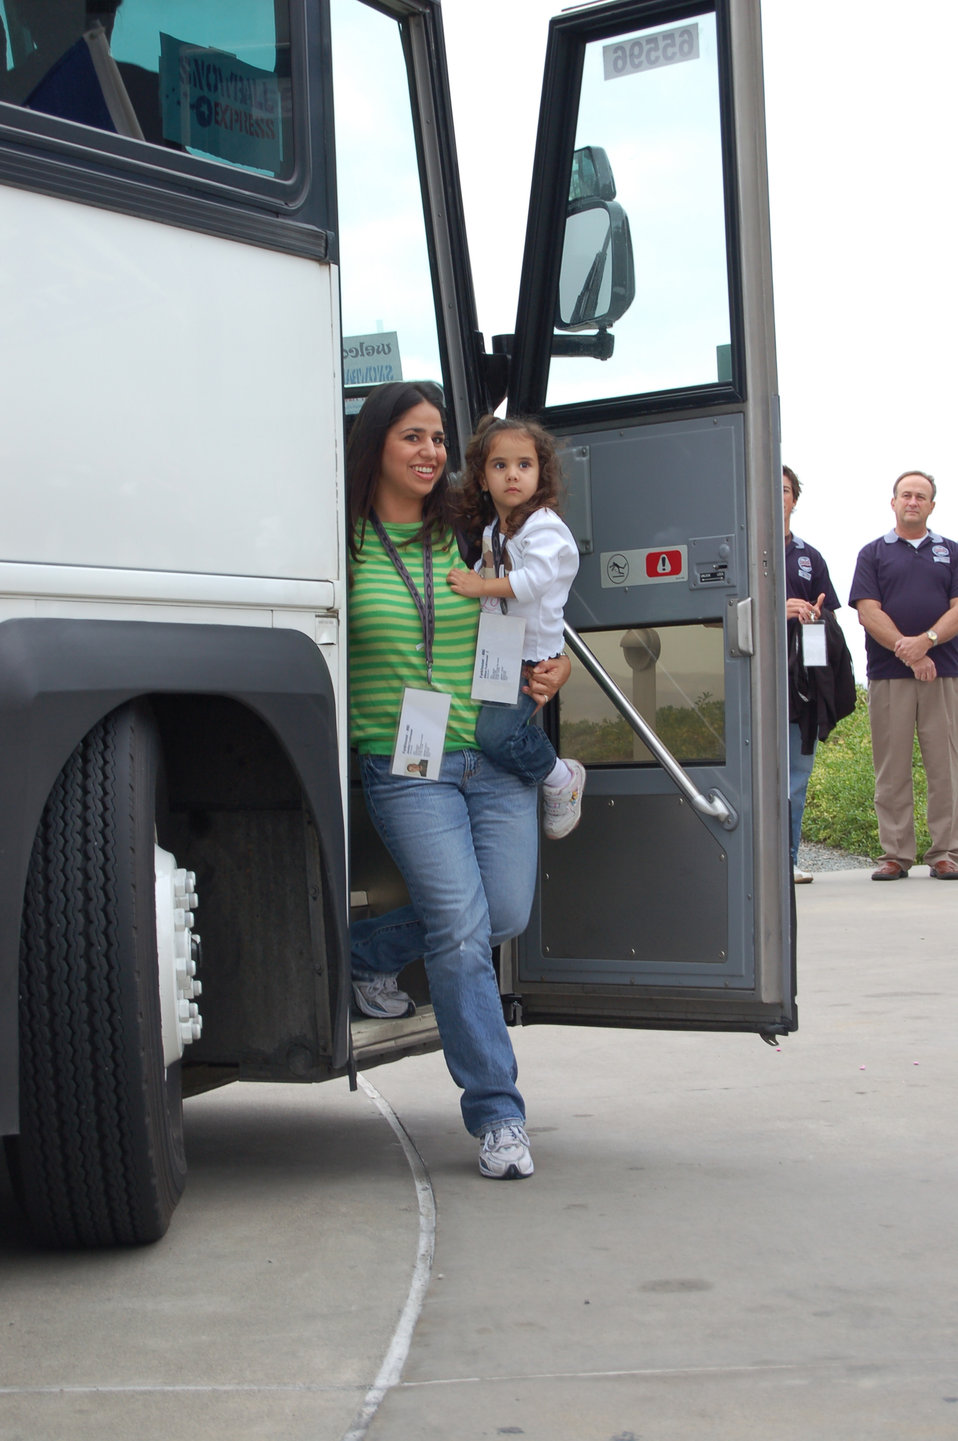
Retired colonel provides air support for Snowball Express

Jennifer Funkhouser holds her daughter, Allison, as she steps off the bus after arriving at the Oakley party Dec. 16. The party took place during the second day of the four-day Snowball Express event. The final two days of Snowball Express include a trip to Disneyland and tickets to an Anaheim Ducks game.